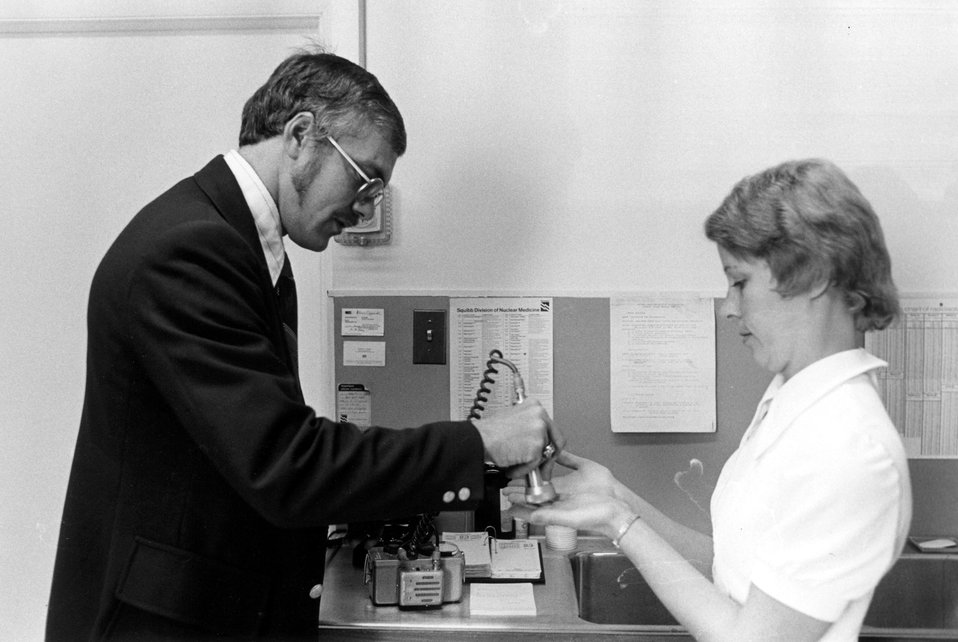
At a Pennsylvania hospital, an AEC inspector checks the hands of the nuclear medicine technician for possible radioactive contamination.